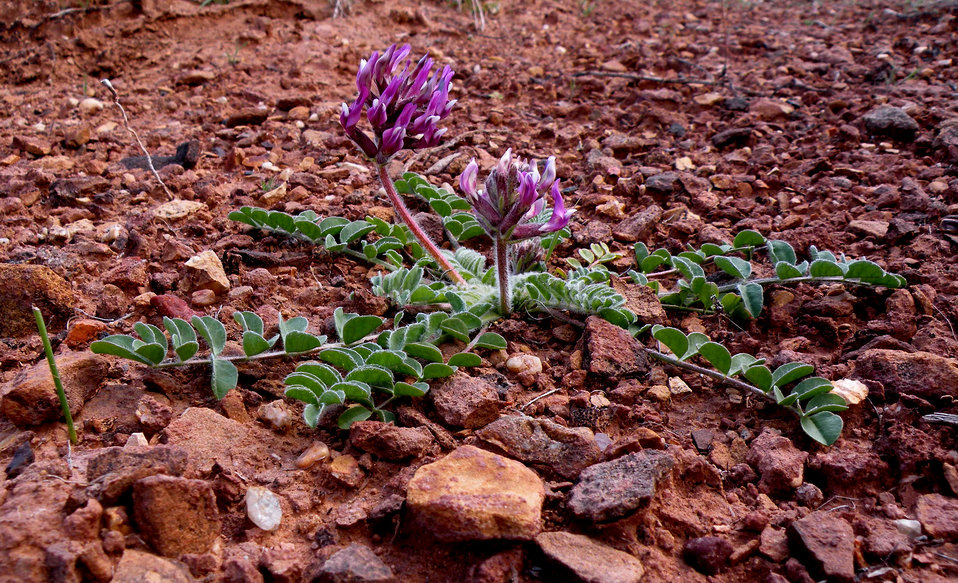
Holmgren milkvetch (Astragalus holmgreniorum)

Holmgren milkvetch is endemic to northern Mohave County in Arizona and to Washington County in SW Utah. It occurs in warm desert shrub communities and grows in Virgin River limestone cobble between 2,700 and 2,800 ft. in elevation. It is listed endangered.